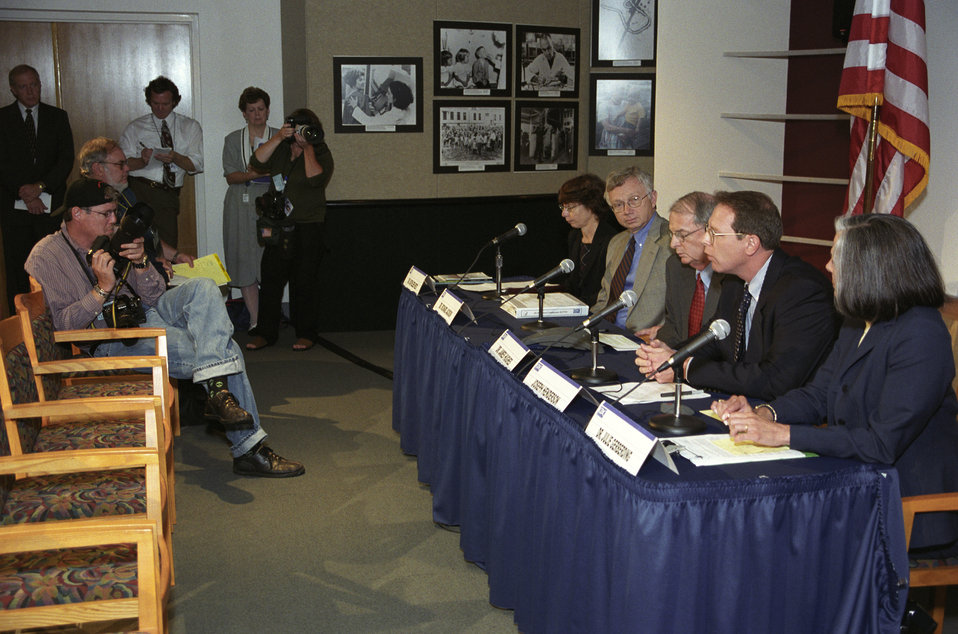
Centers for Disease Control and Prevention Bioterrorism Preparedness Press Briefing, August 27, 2002.